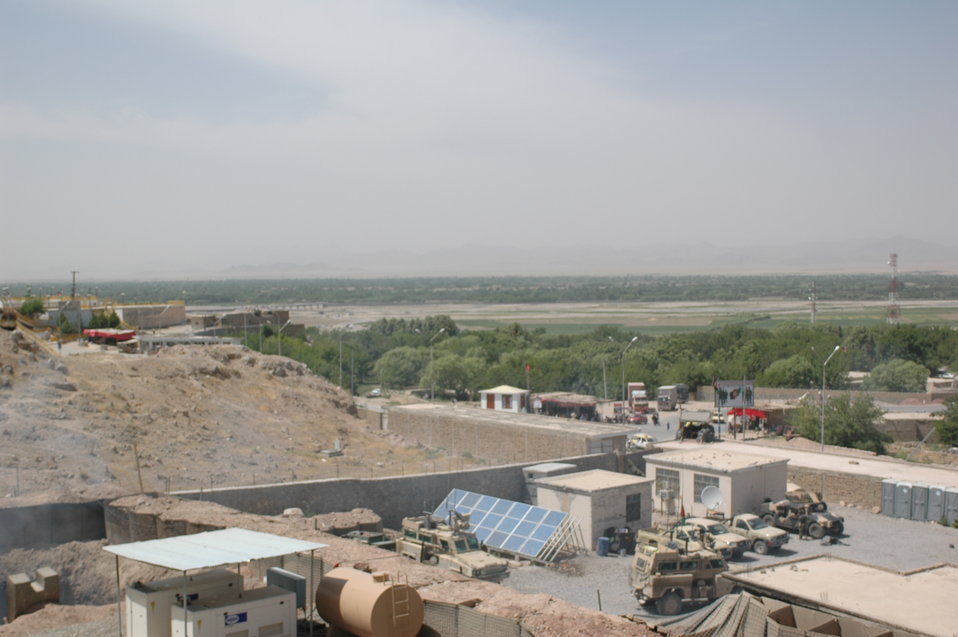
Dr Shah Visits Kandahar April 9, 2010